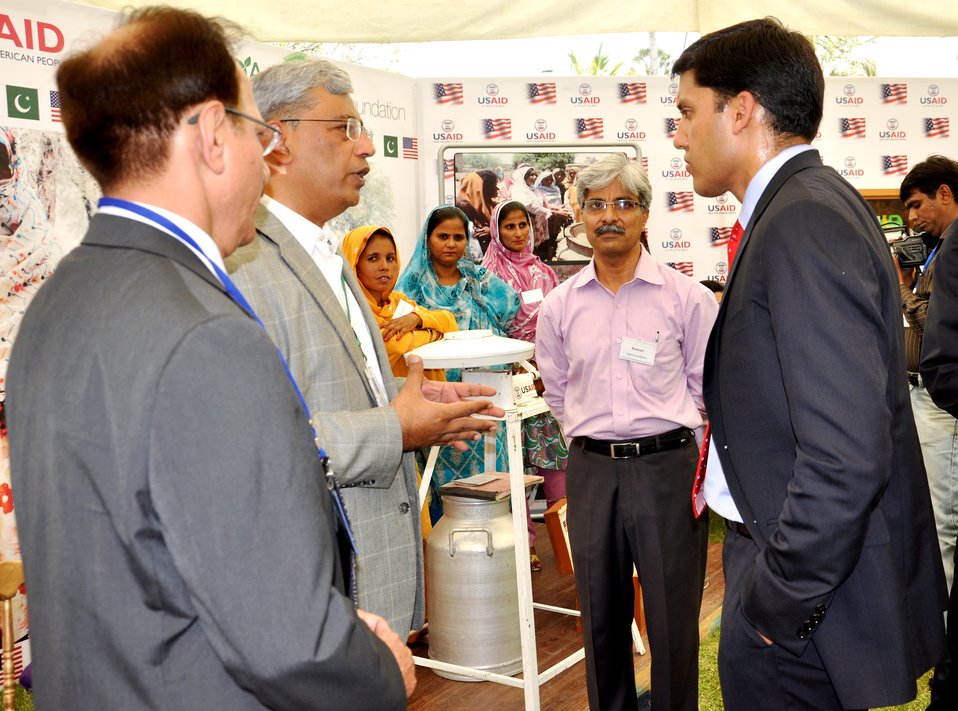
Dr. Rajiv Shah visiting Entrepreneurs project stalls